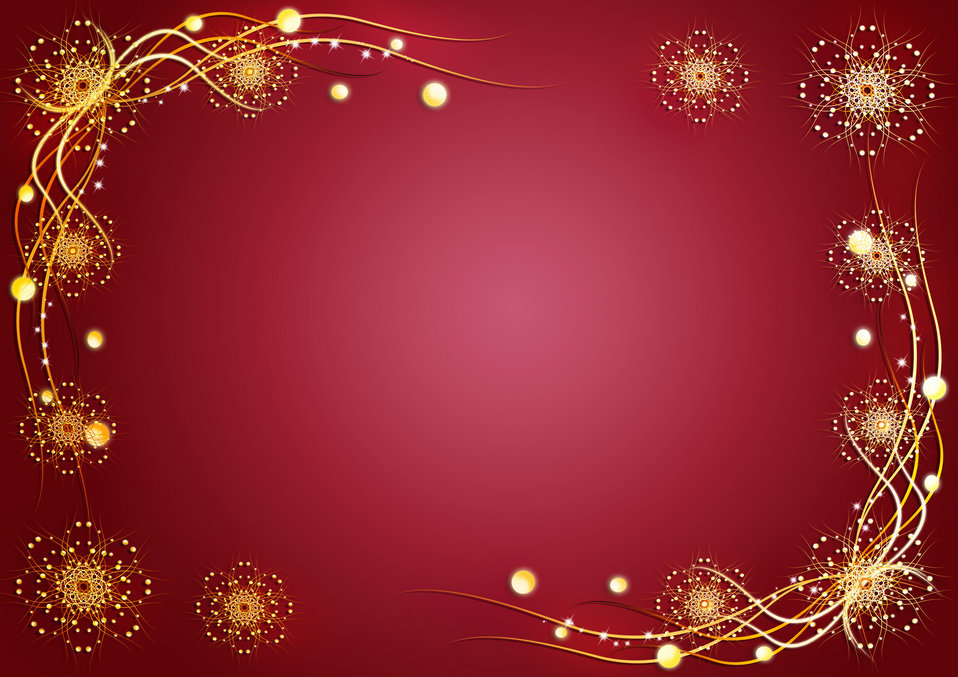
Red background with a pattern.